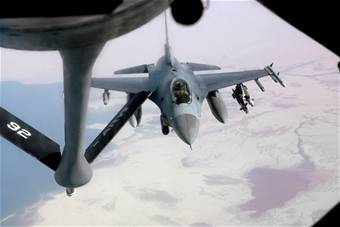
Airpower Summary for Sept. 27, 2007

An F-16 Fighting Falcon approaches a KC-135 Stratotanker over central Iraq to refuel while supporting Operation Iraqi Freedom.